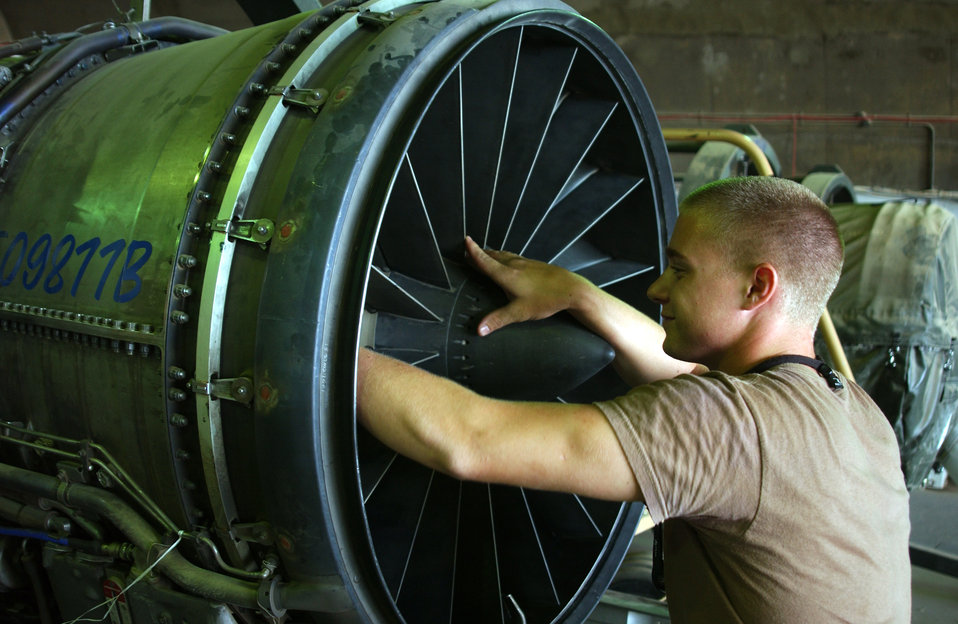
Falcons give final flight

Senior Airman Joshua Harrison checks the fan blades on a spare F-16 Fighting Falcon engine at Balad Air Base, Iraq. The Airman is a jet engine mechanic with the 332nd Expeditionary Aircraft Maintenance Squadron's aircraft maintenance unit. The 332nd and 524th Expeditionary Fighter Squadrons deploy with spare engines in case of emergencies.